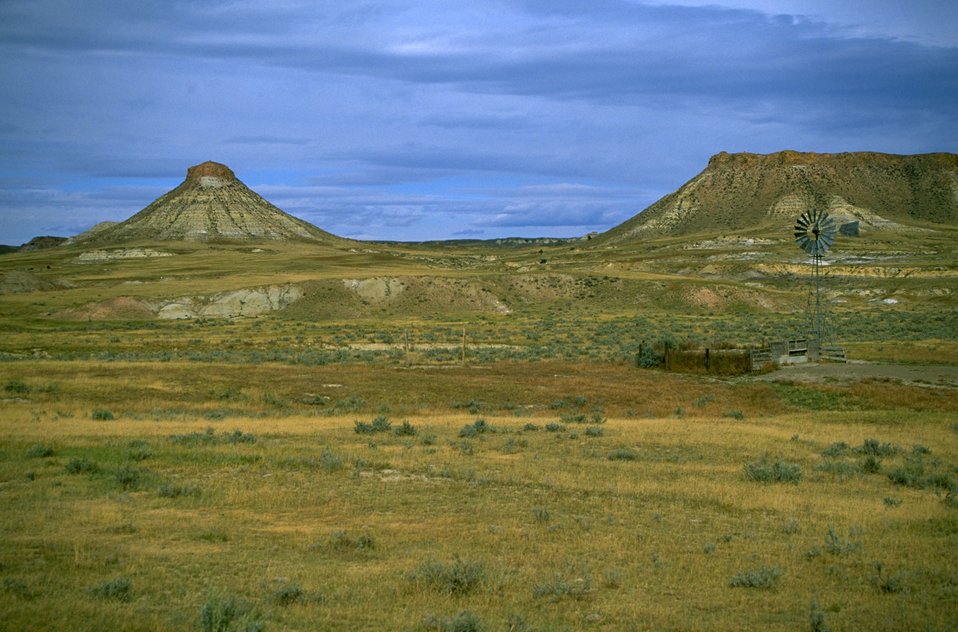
A windmill on the prairies of eastern Montana